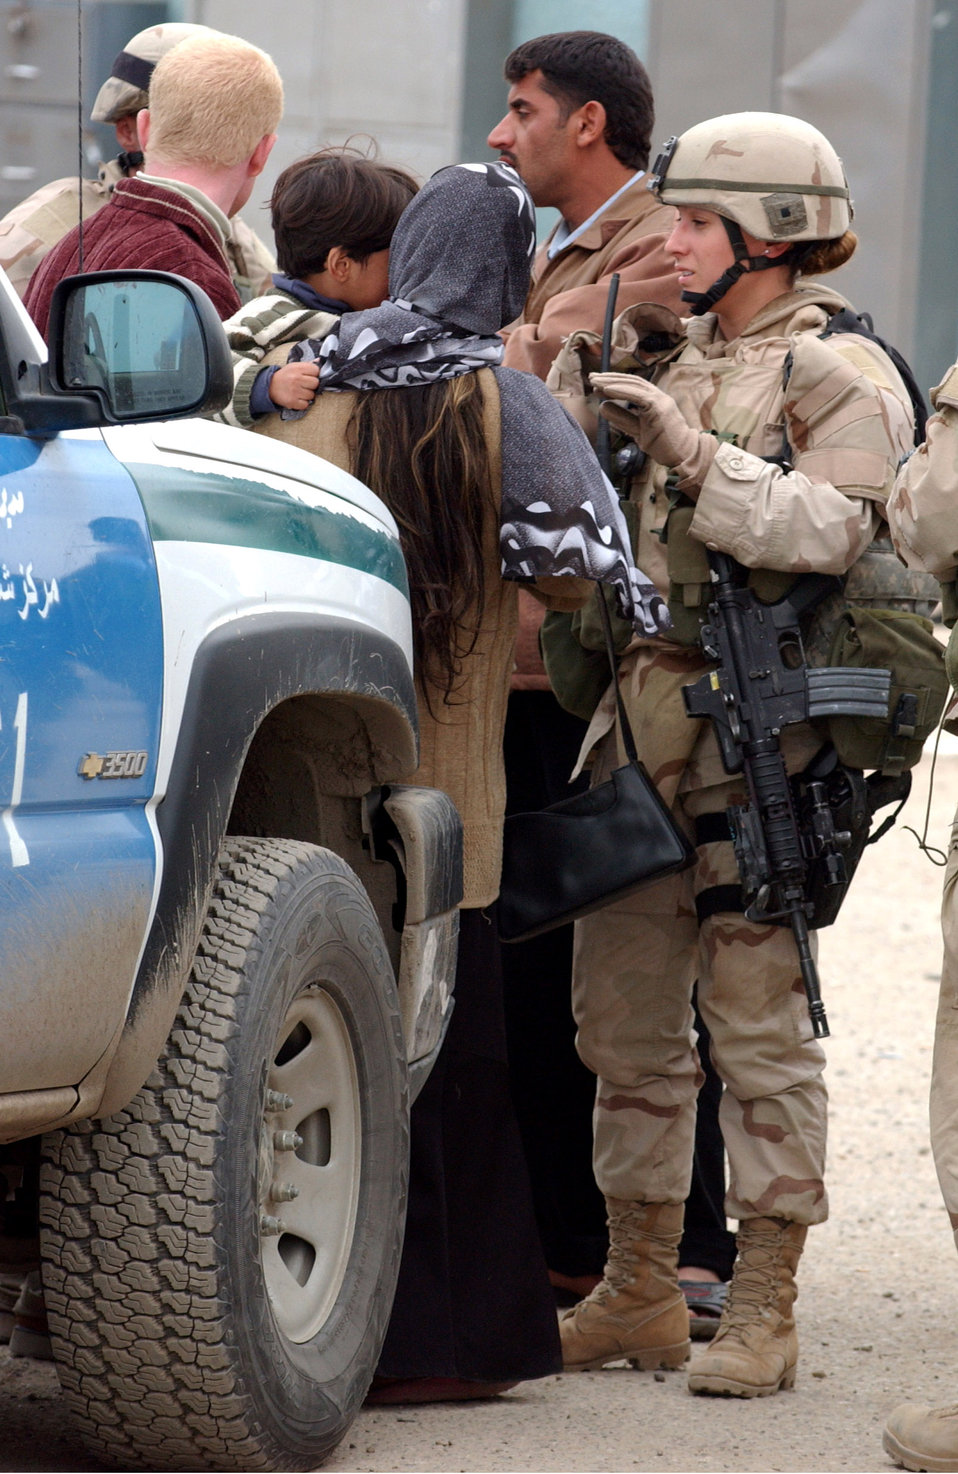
Street patrol

Staff Sgt. Maria Miranda interviews Iraqi citizens Nov. 23 at the Hy Al-Amil police station in Baghdad, Iraq. Airmen from Detachment 7, 732nd Expeditionary Security Forces Squadron deploy into the city streets of Baghdad assisting Iraqi police in achieving self-sufficiency.